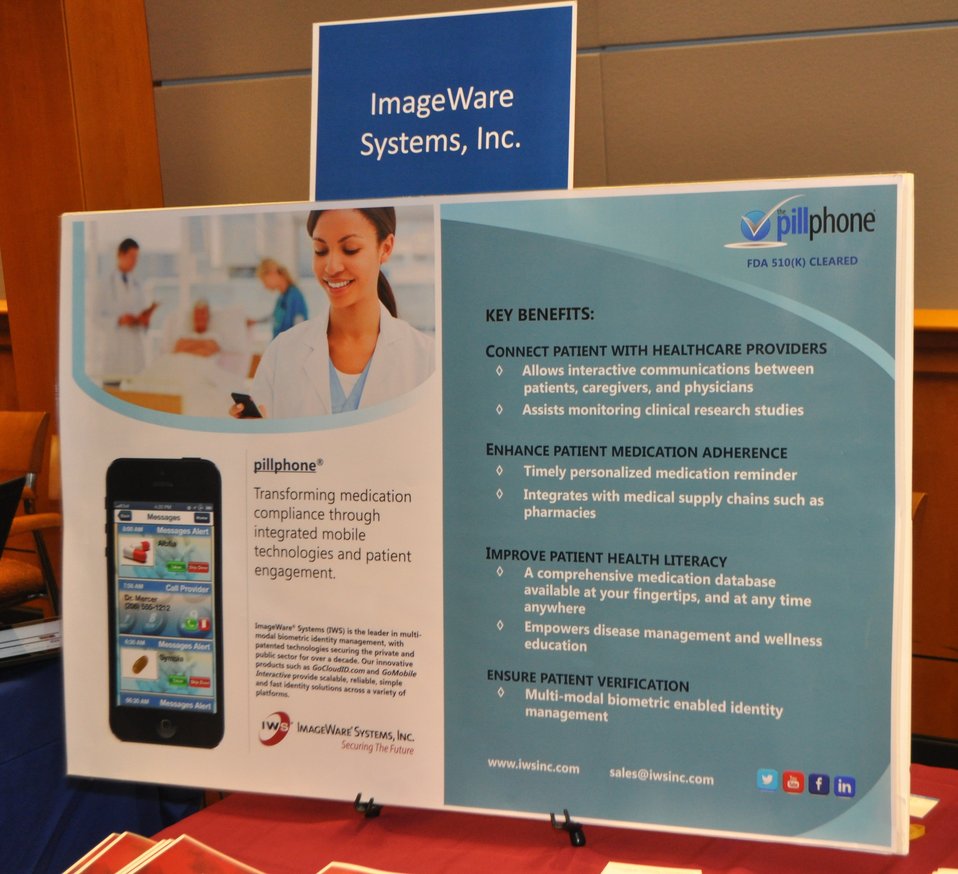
12.6.13 mHealth Innovation Expo

FCC mHealth Innovation Expo.